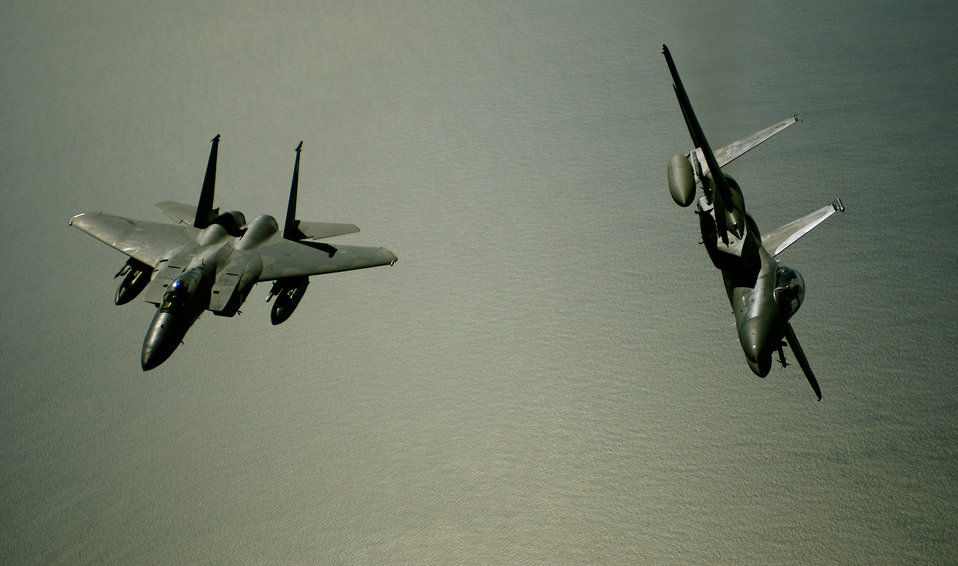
Double Eagle

OVER THE ATLANTIC OCEAN -- Two F-15 Eagles from Langley Air Force Base, Va., fly in formation.